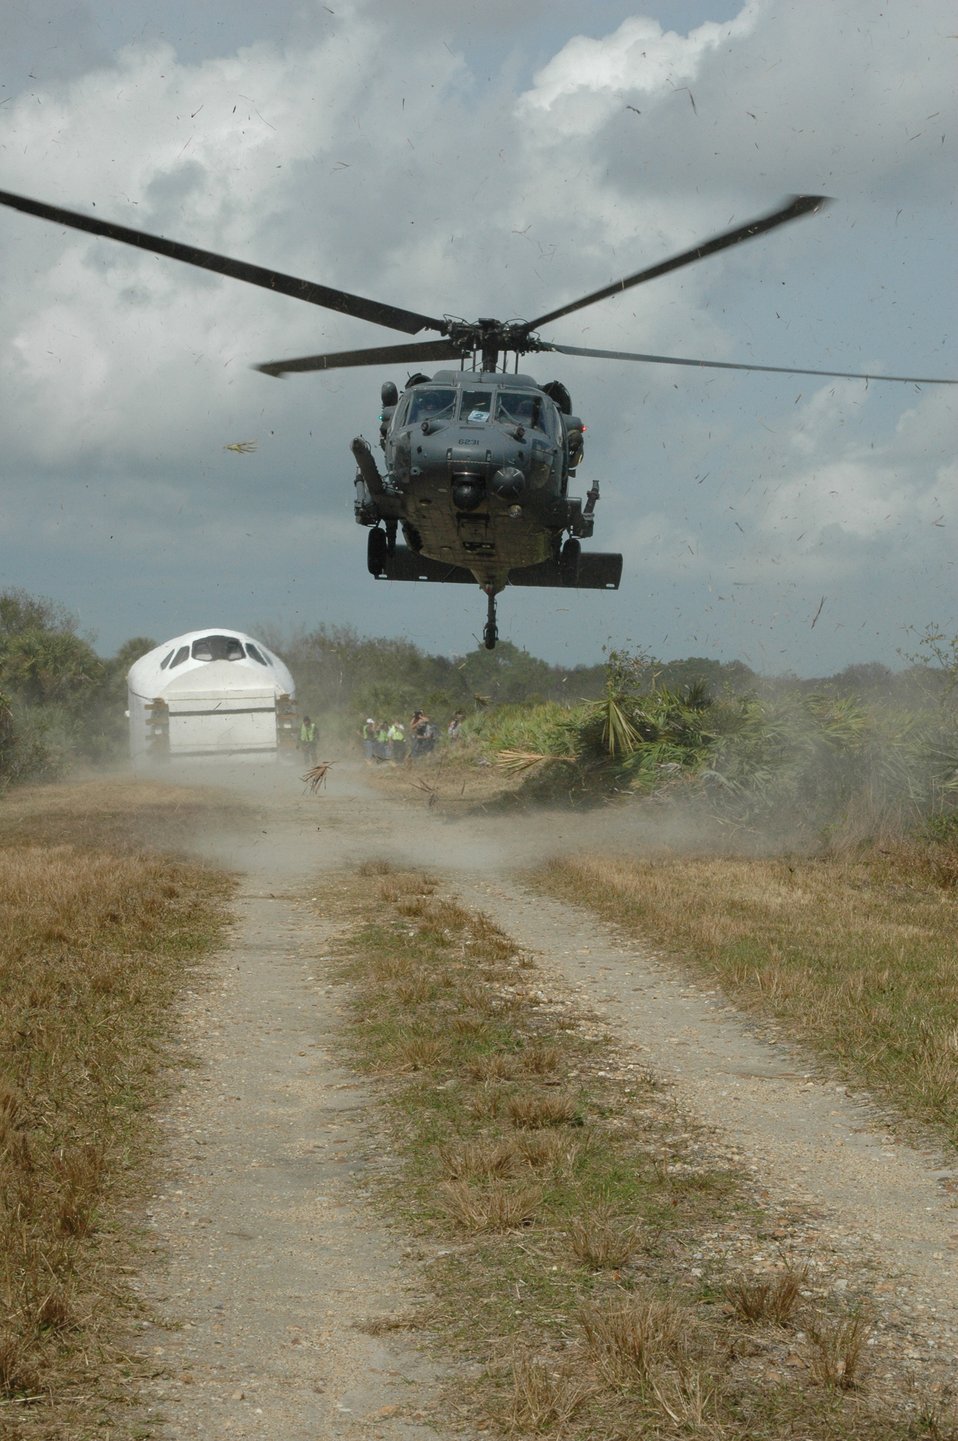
NASA exercise tests rescue wing skills

A 301st Rescue Squadron HH-60 Pave Hawk provides 308th RQS pararescuemen and NASA emergency firefighters airlift to a remote location on Cape Canaveral Air Force Station, Fla. where a Mode 7 Exercise took place Feb. 13. The 301st and 308th are part of the Air Force Reserve's 920th Rescue Wing at Patrick Air Force Base.